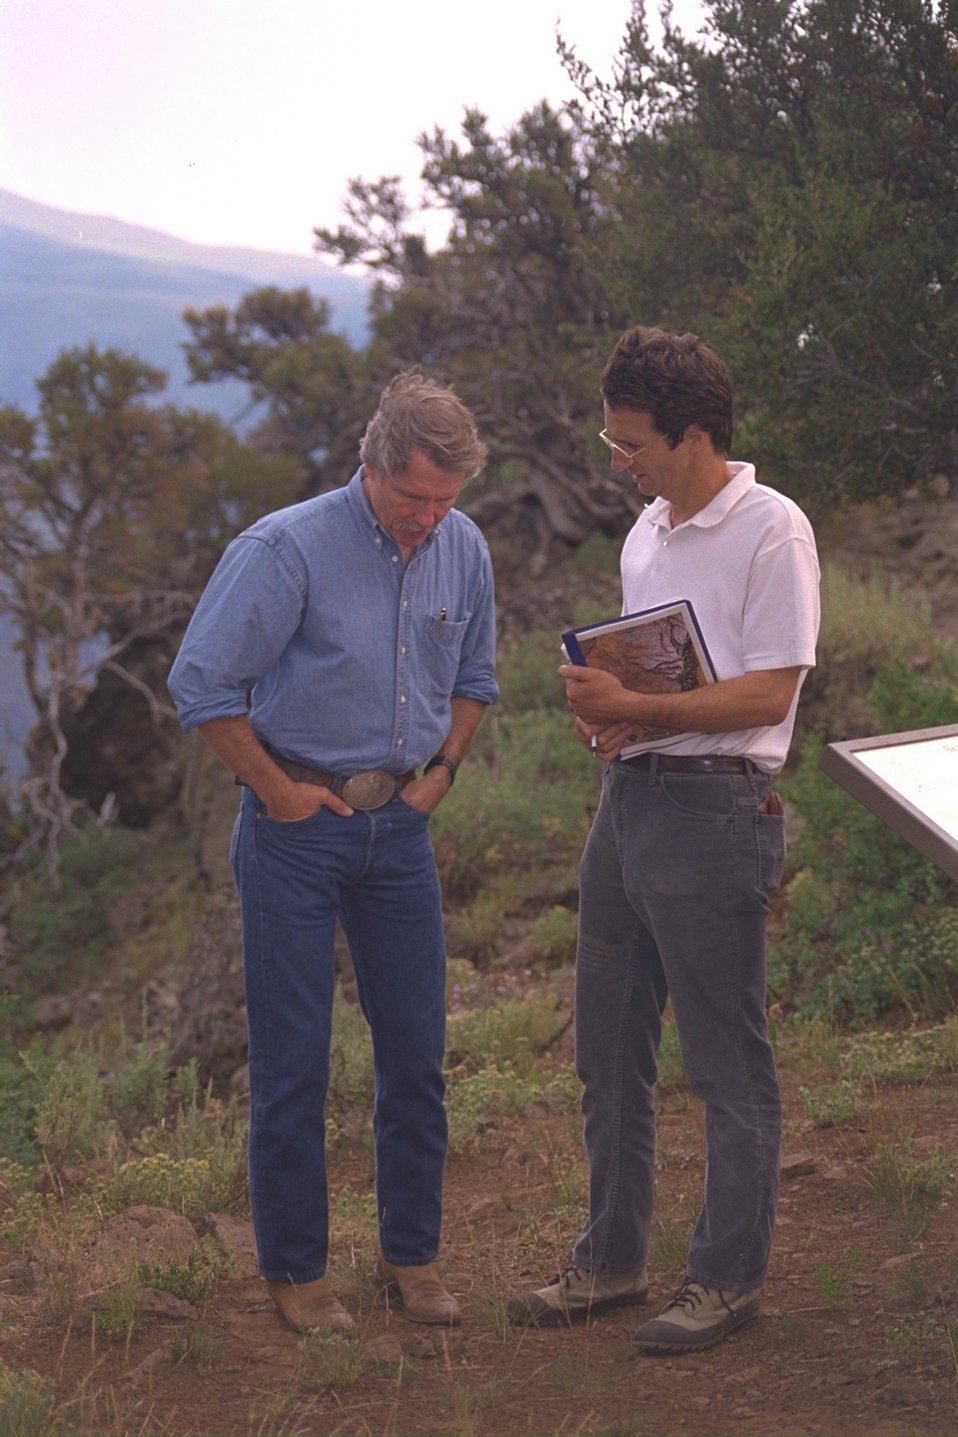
Governor Kitzhaber with Oregonian newspaper reporter Hal Barnton at Big Indian Gorge overlook.